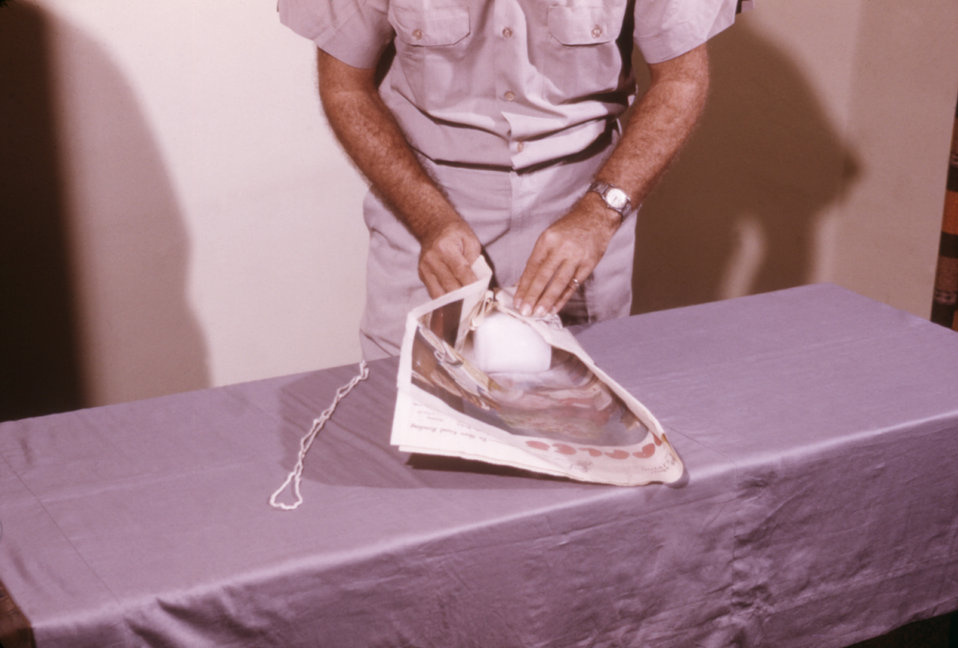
This CDC field researcher is shown preparing a block of dry ice, which will be used to attract mosquitoes for arbovirus studies.